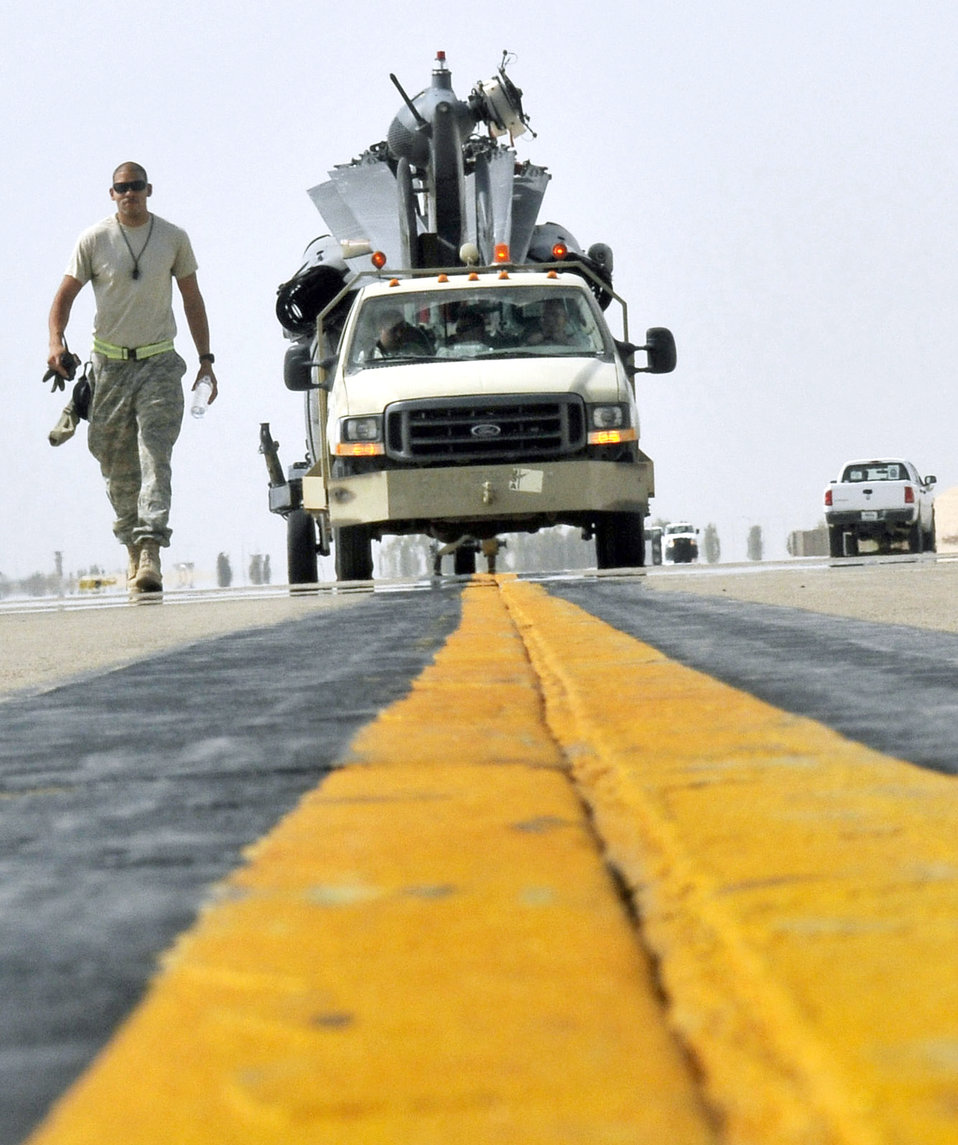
Moving HH-60 Pave Hawks

Staff Sgt. Eric Clayborn walks back to the lead vehicle after performing a safety check on an HH-60 Pave Hawk at Joint Base, Balad, Aug. 12, 2010. Sergeant Clayborn and his fellow maintainers from the 332nd Expeditionary Aircraft Maintenance Squadron are responsible for disassembling and shipping the 22,000-pound aircraft to bases all around the world.